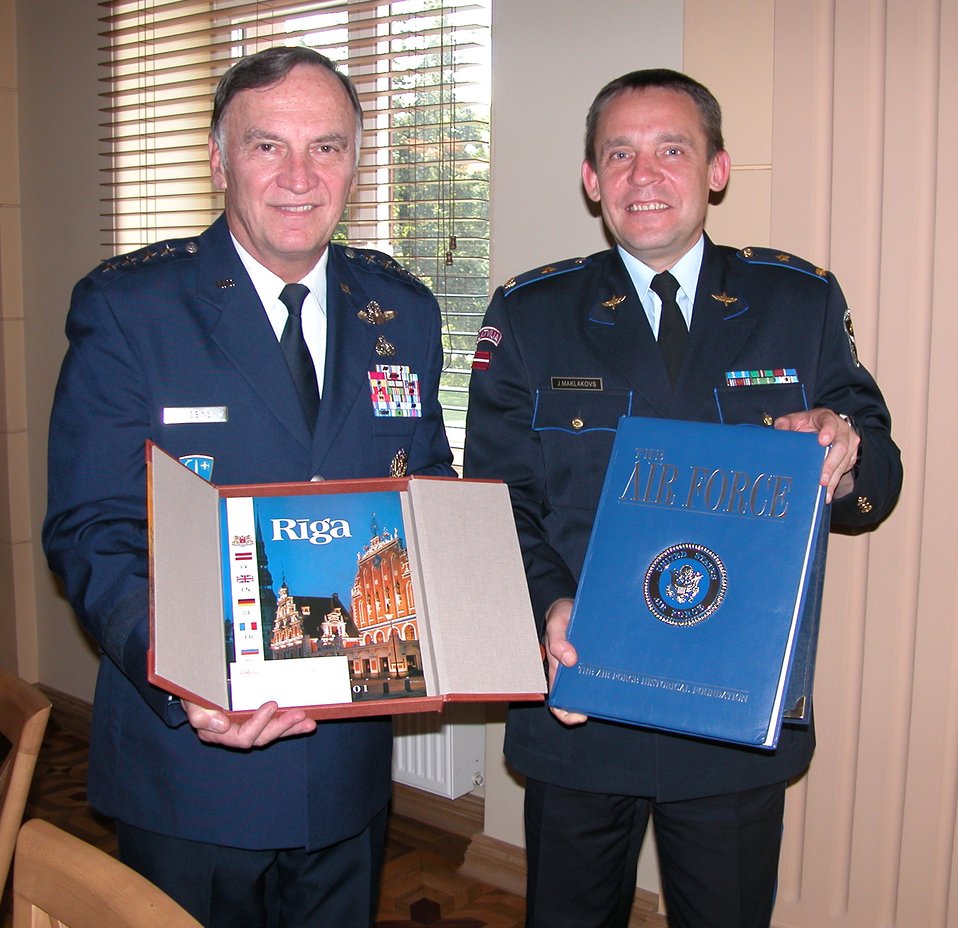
COMUSAFE forges relations with Latvian officials

Gen. William T. Hobbins (left), U.S. Air Forces in Europe commander, and Brig. Gen. Juris Maklakvos, Latvian armed forces commander, present one another with books during General Hobbins' visit to Riga, Latvia, Sept. 11.